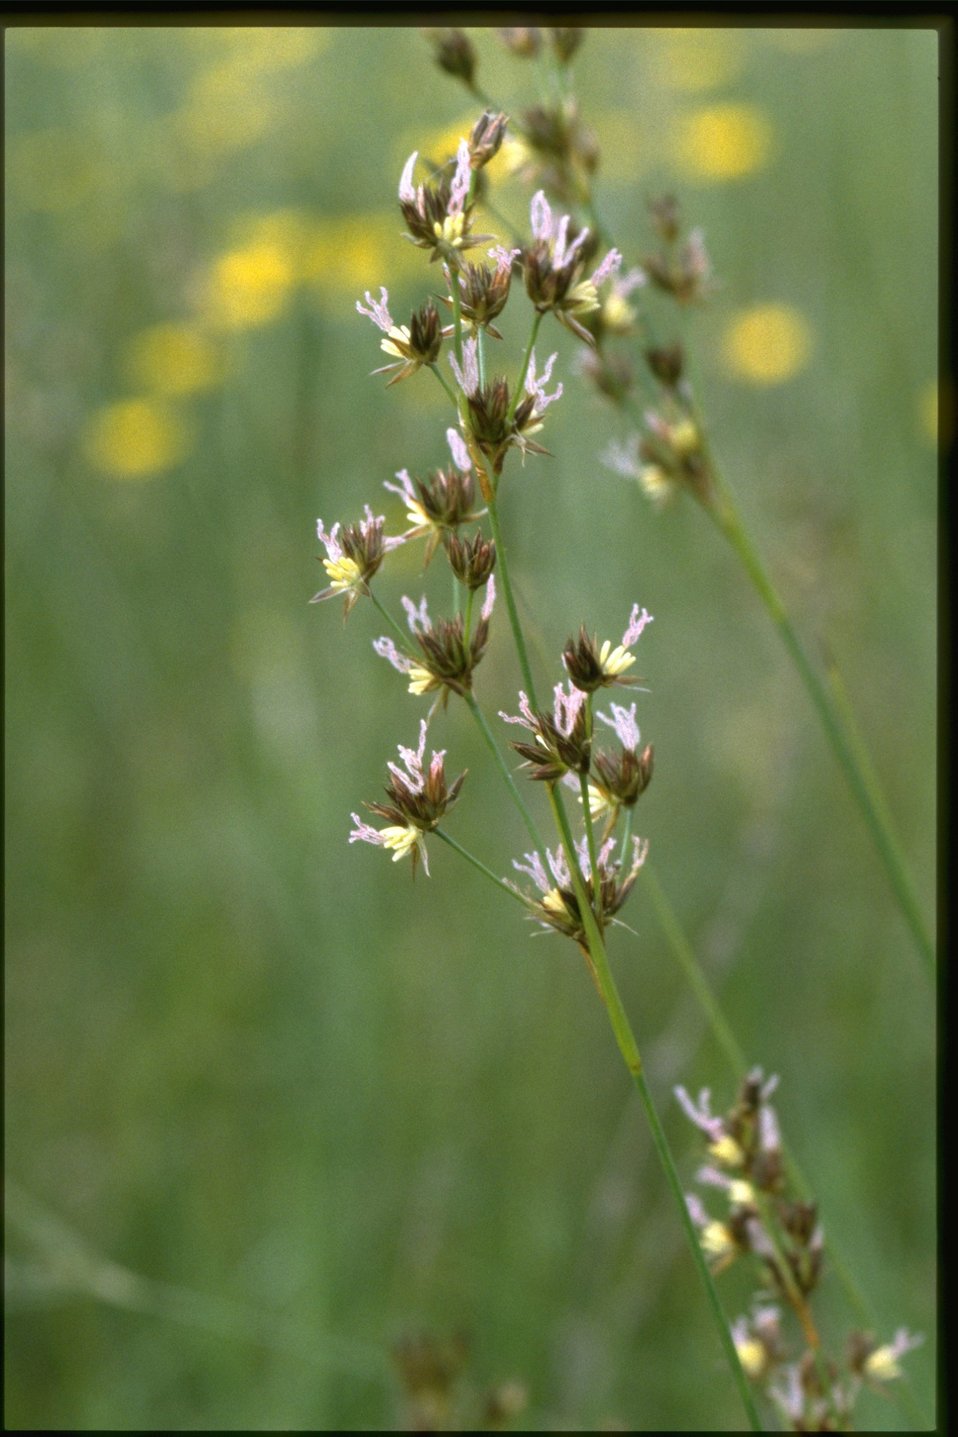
Closeup shot of Luncus.